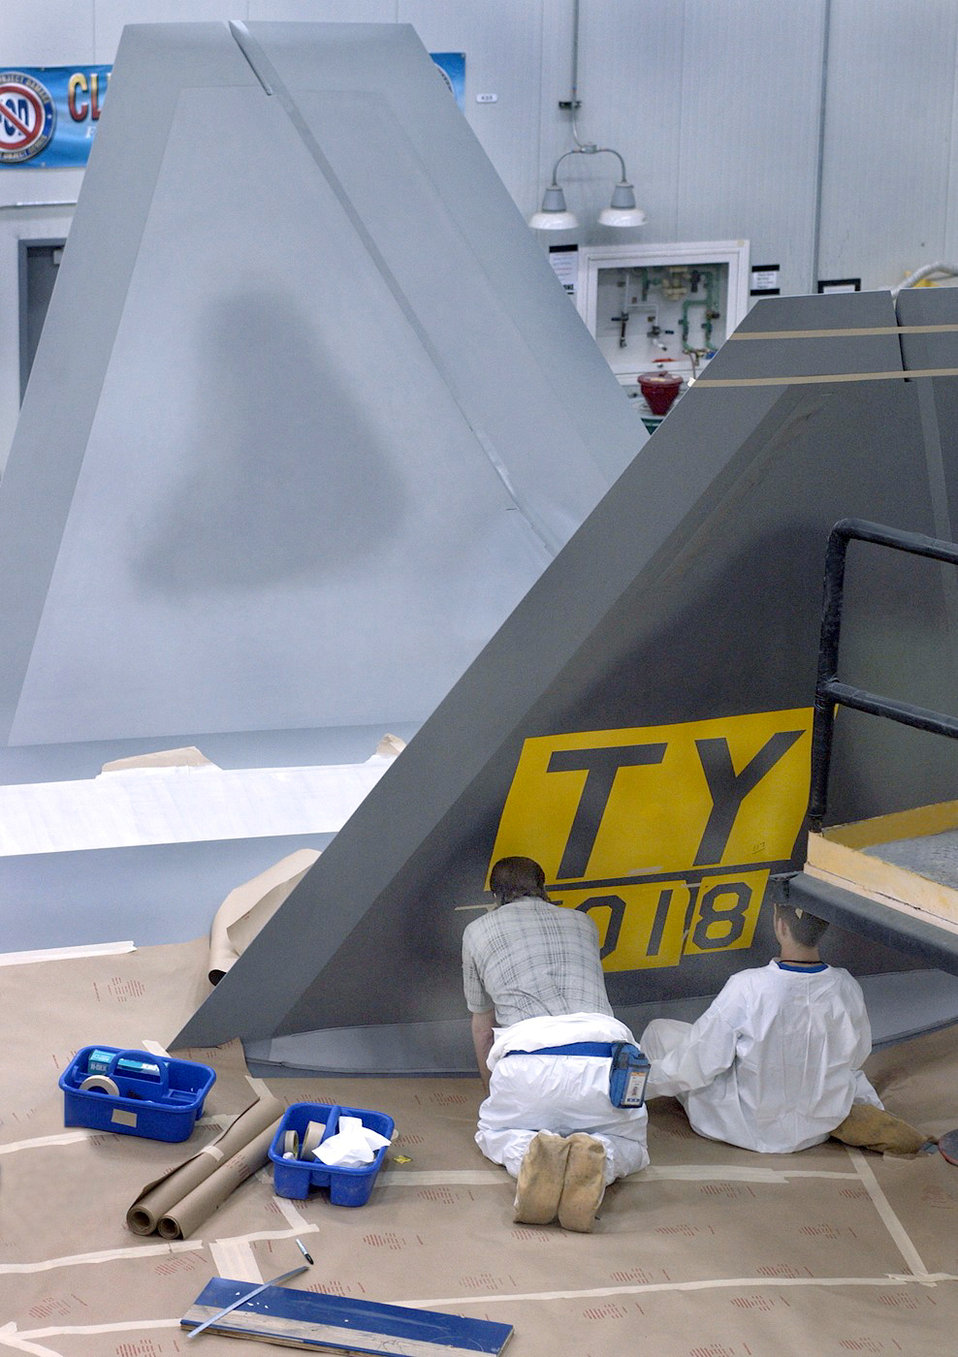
Hatching a Raptor

MARIETTA, Ga. (AFPN) -- John Fotey (left) and Andrew Velasko paint the 325th Fighter Wing designation on the tail of an F/A-22 Raptor at the Lockheed Martin Aeronautics Company assembly plant here. The jet, Raptor 18, will be used to train pilots in the 43rd Fighter Squadron at Tyndall Air Force Base, Fla. One aircraft each month is expected to arrive at Tyndall following Raptor 18's arrival.